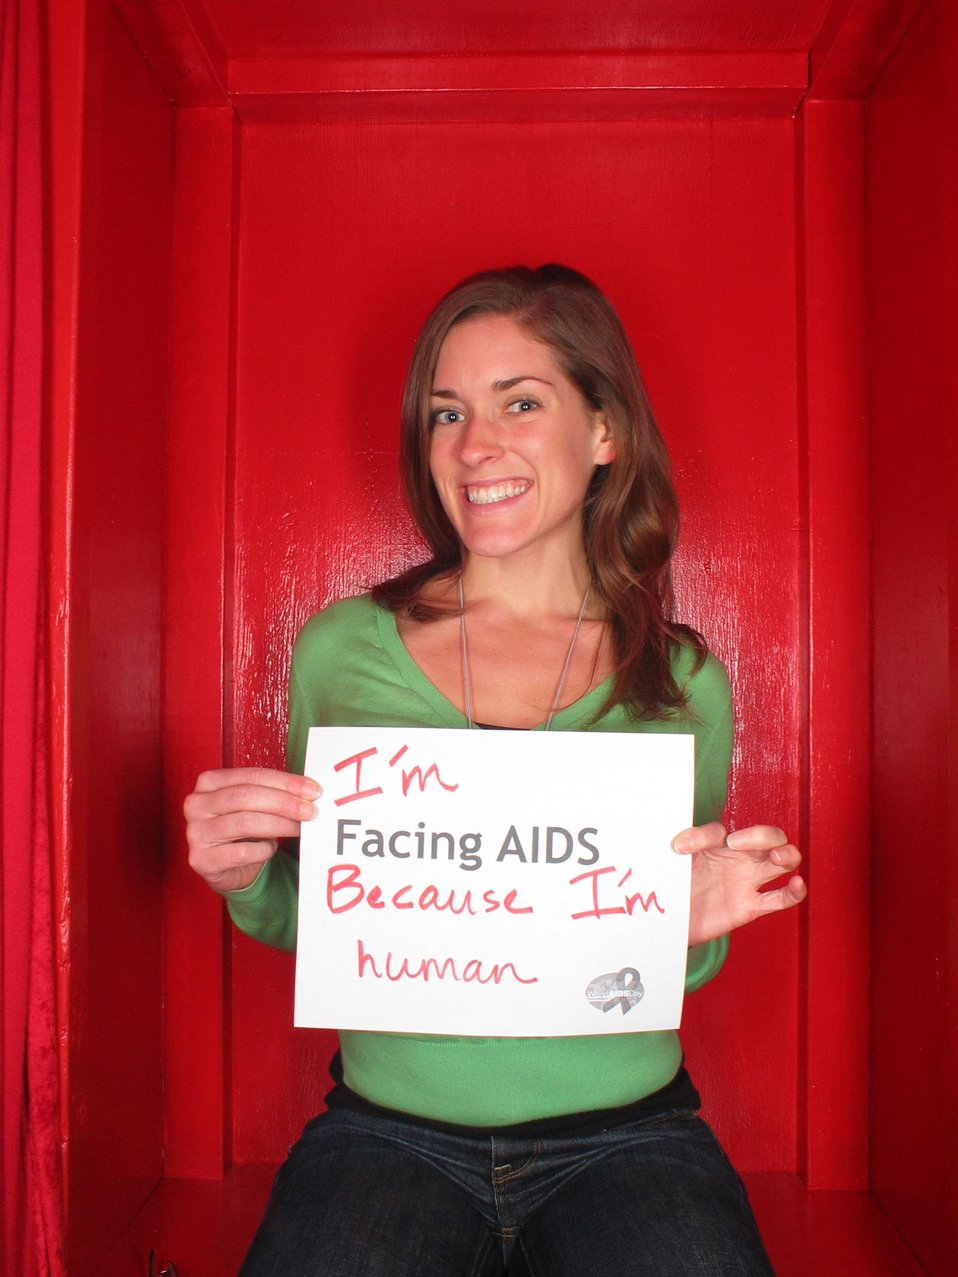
I'm Facing AIDS because I'm human.